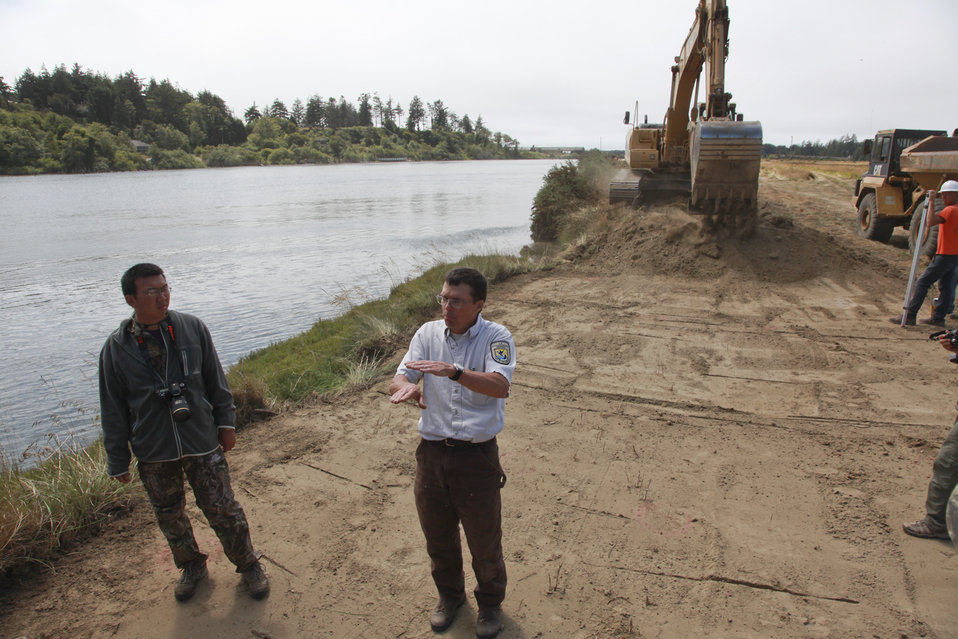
Jia Yifei and the Services's Dave Ledig